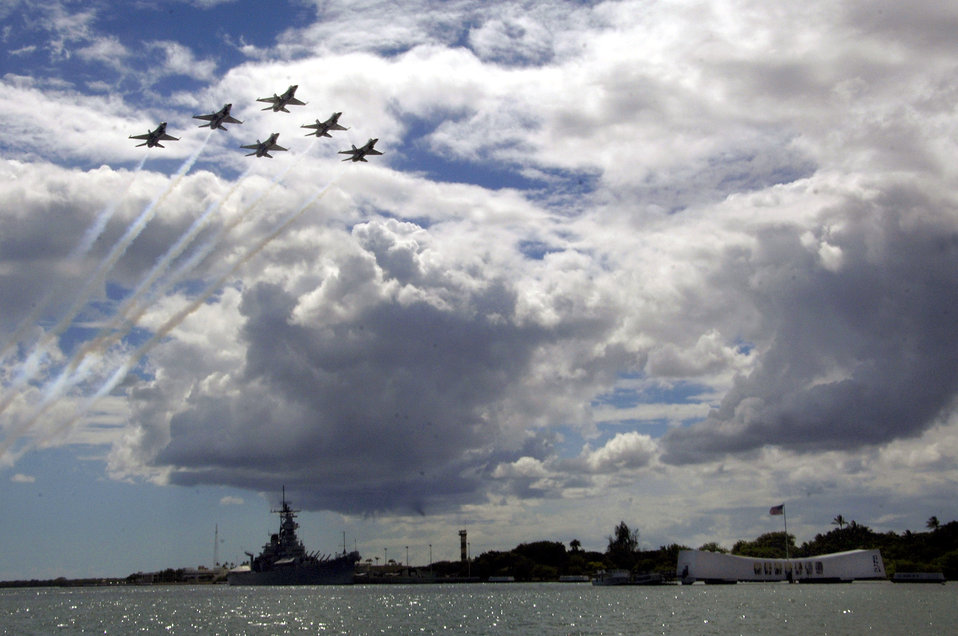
T-birds over Honolulu

The Thunderbirds fly over the U.S.S. Missouri and the U.S.S. Arizona Memorial in Honolulu Sept. 13 during their visit to Hawaii to commemorate the U.S. Air Force's 60th anniversary.